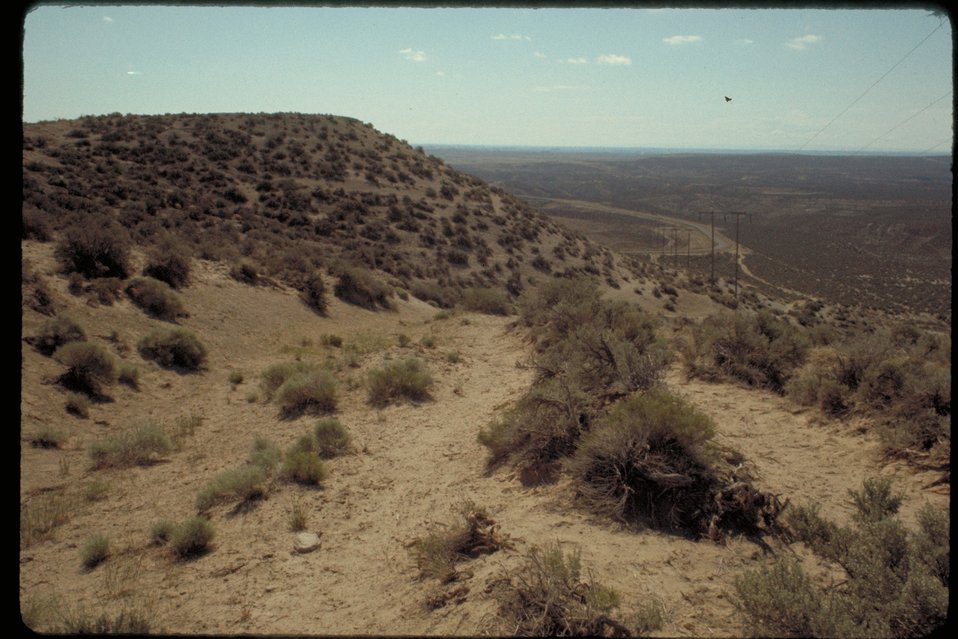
Oregon Trail near Bell Rapid Rd Cultural resource Historic area LSRD Lower Snake River District